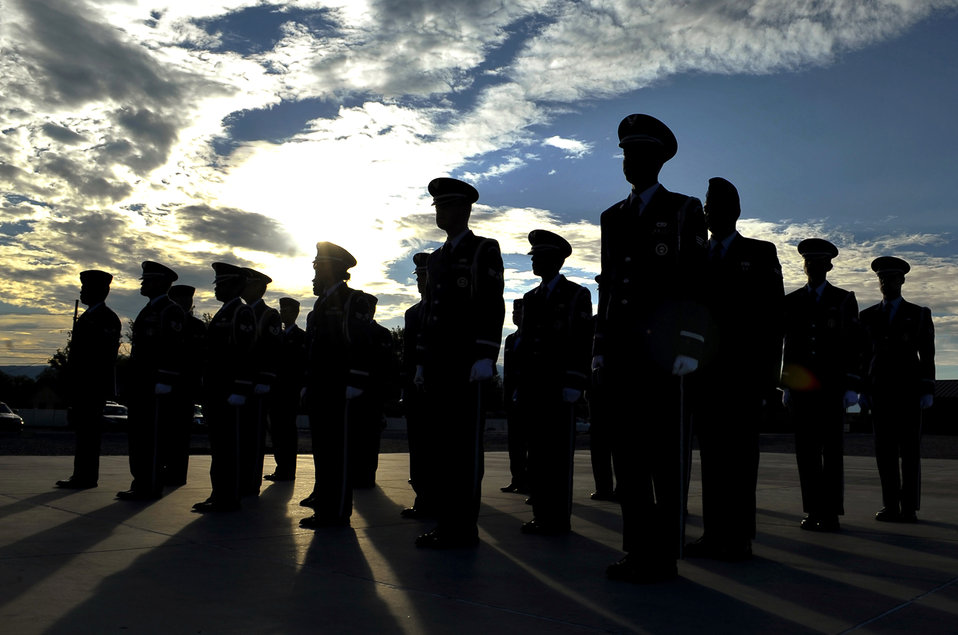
Attention!

Members of the Steel Talon Honor Guard stand at attention during an open ranks inspection Aug. 17, 2010, at Holloman Air Force Base, N.M. The base honor guard performs inspections once a month to exercise discipline and to ensure their uniforms are top-notch.